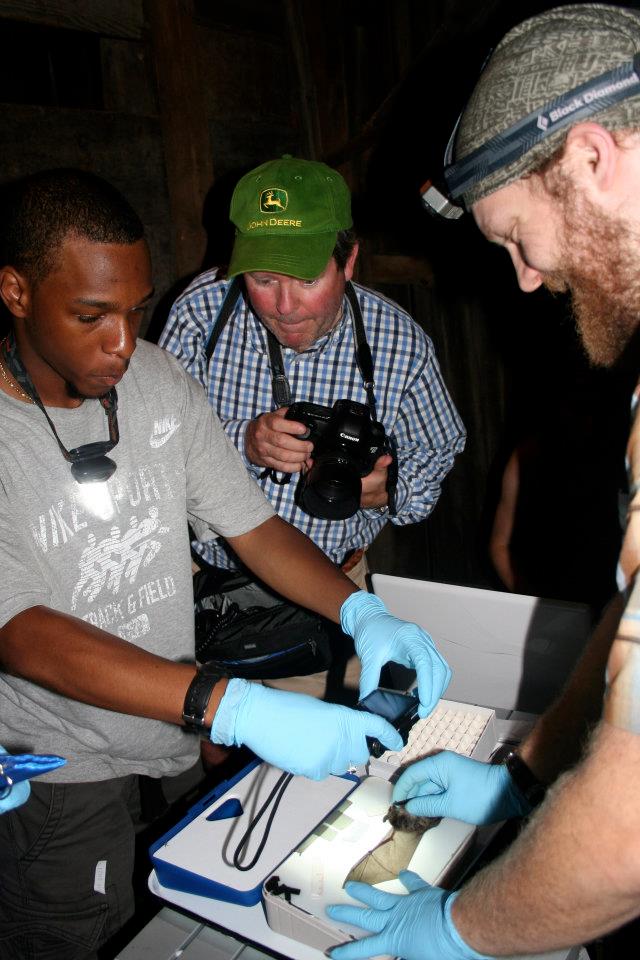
Collecting samples while NYT photographer looks on